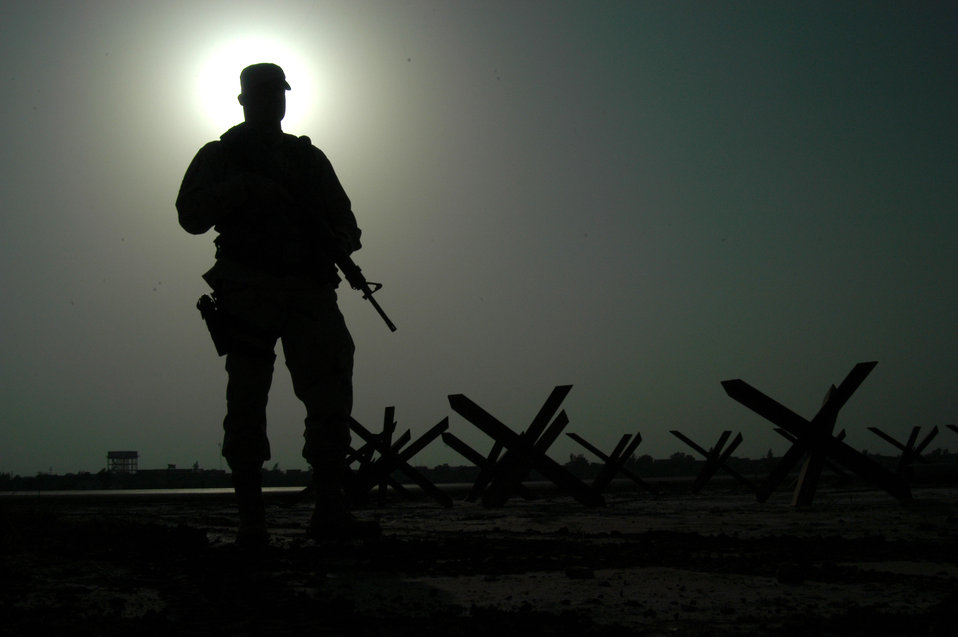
Stars at night

OPERATION ENDURING FREEDOM (AFPN) -- Staff Sgt. Justin Sherman looks over star barricades near the flightline at a forward-deployed location. Security forces at this location added more than 3,500 barricades throughout the installation. Sherman is the noncommissioned officer in charge of force protection with the 438th Expeditionary Security Forces Squadron and deployed from the 95th SFS at Edwards Air Force Base, Calif.